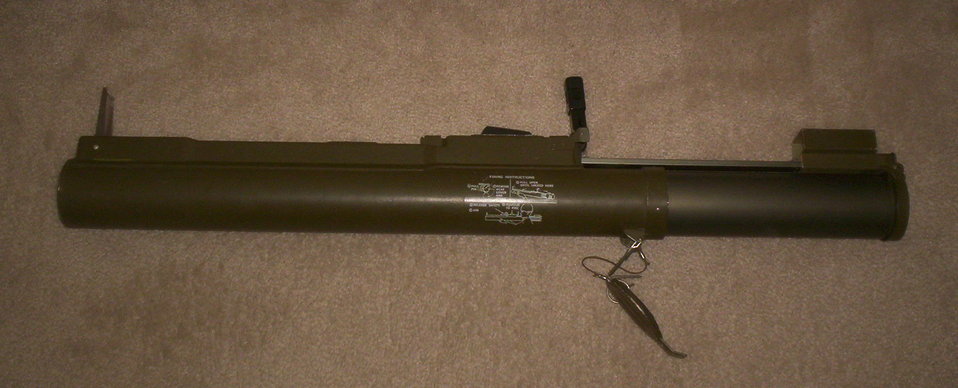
taken by myself, tube is demilitarized and in my private collection